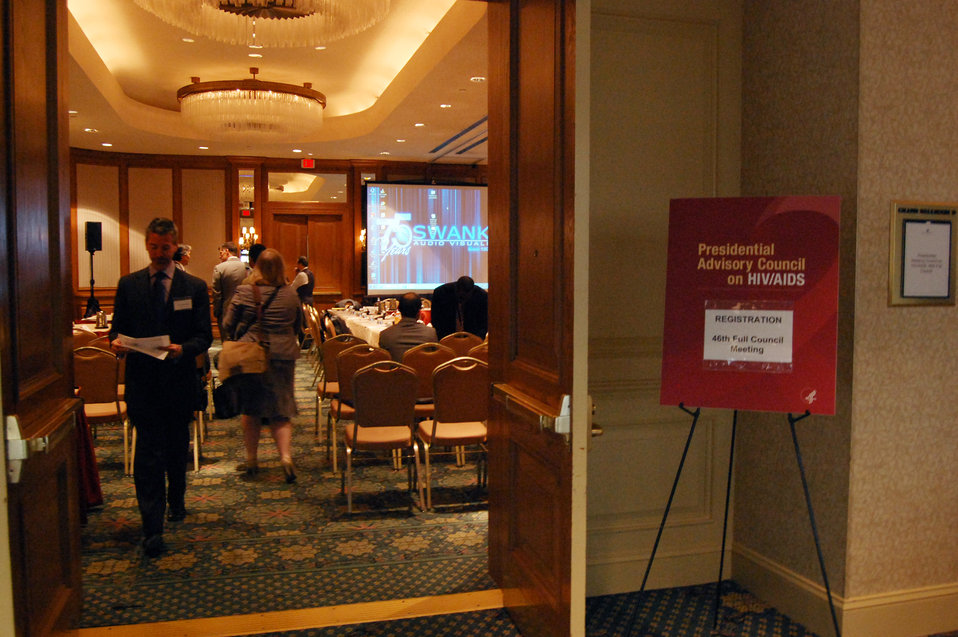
PACHA conf015